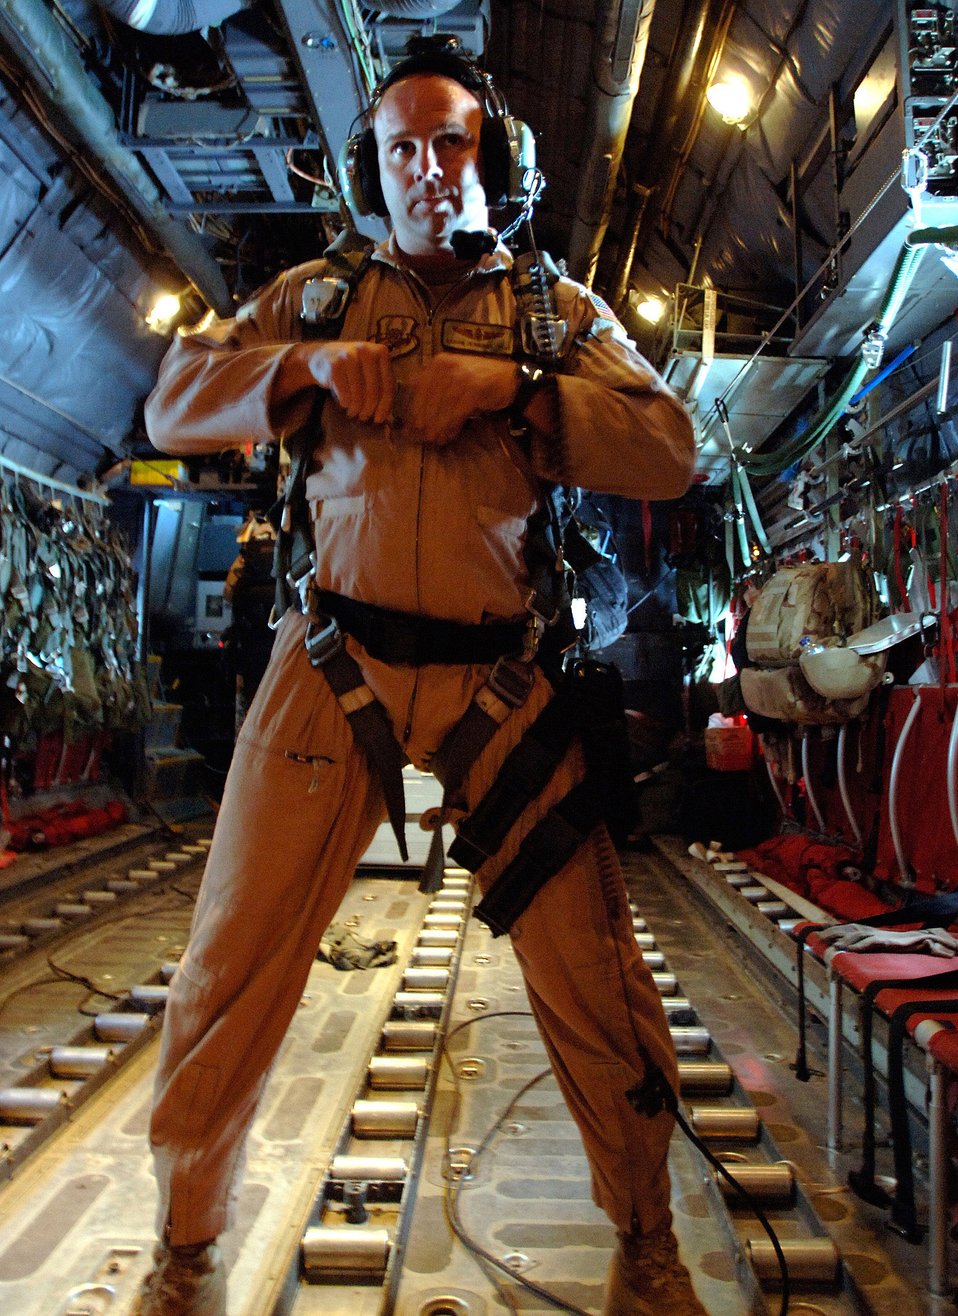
Leaflet airdrop mission delivers clear message to Taliban

Tech. Sgt. Aaron Jennings, a C-130 Hercules loadmaster, locks his harness March 6 in preparation to drop 30,000 warning leaflets over the southern mountains of Afghanistan. The leaflet airdrop mission is contributing to Operation Achilles, launched March 6 by International Security Assistance Force, to create an environment that will enable the government of Afghanistan to help improve security and the Afghan people's quality of life.